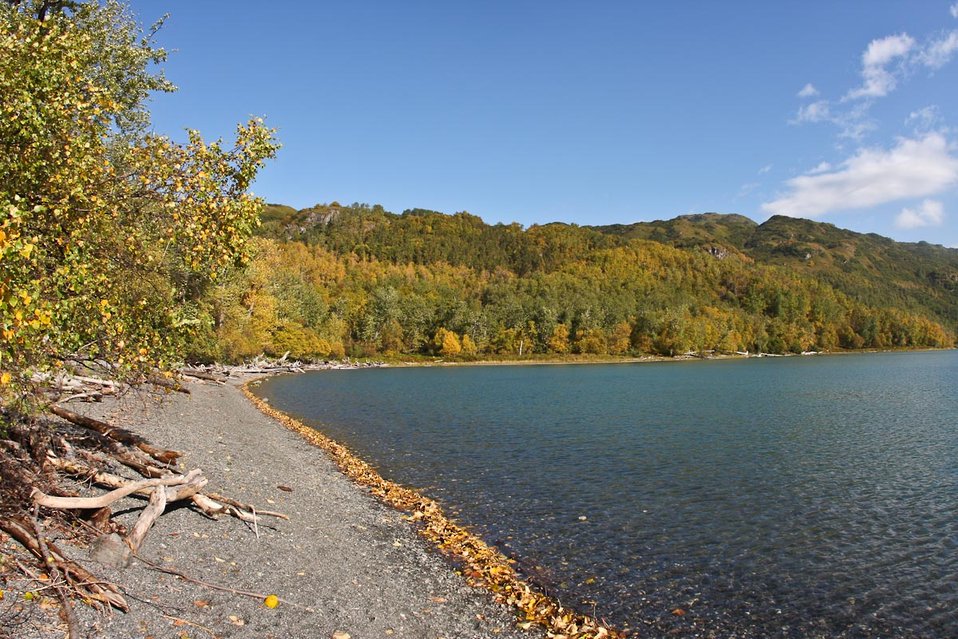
Lower Uganik Lake

Lisa Hupp/USFWS
Source: Kodiak NWR